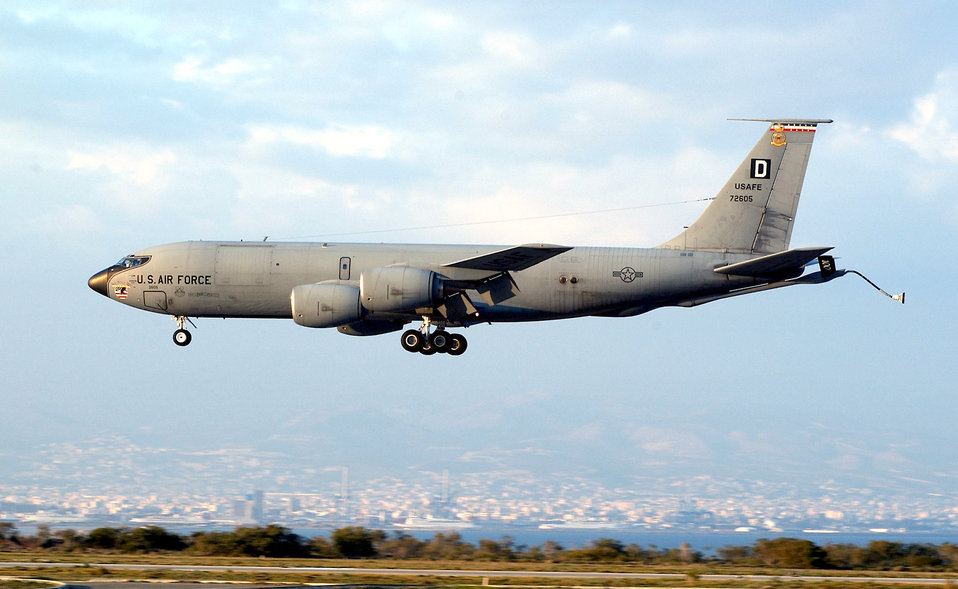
Last-minute call leads to unplanned refueling mission

A KC-135 Stratotanker from the 100th Air Refueling Wing, like this one, took off from Royal Air Force Mildenhall Feb. 7 on an unscheduled mission to refuel a C-17 Globemaster III that was rushing injured troops from Iraq to Andrews Air Force Base, Md. The rendezvous saved the air-evacuation mission some three hours of flying time.